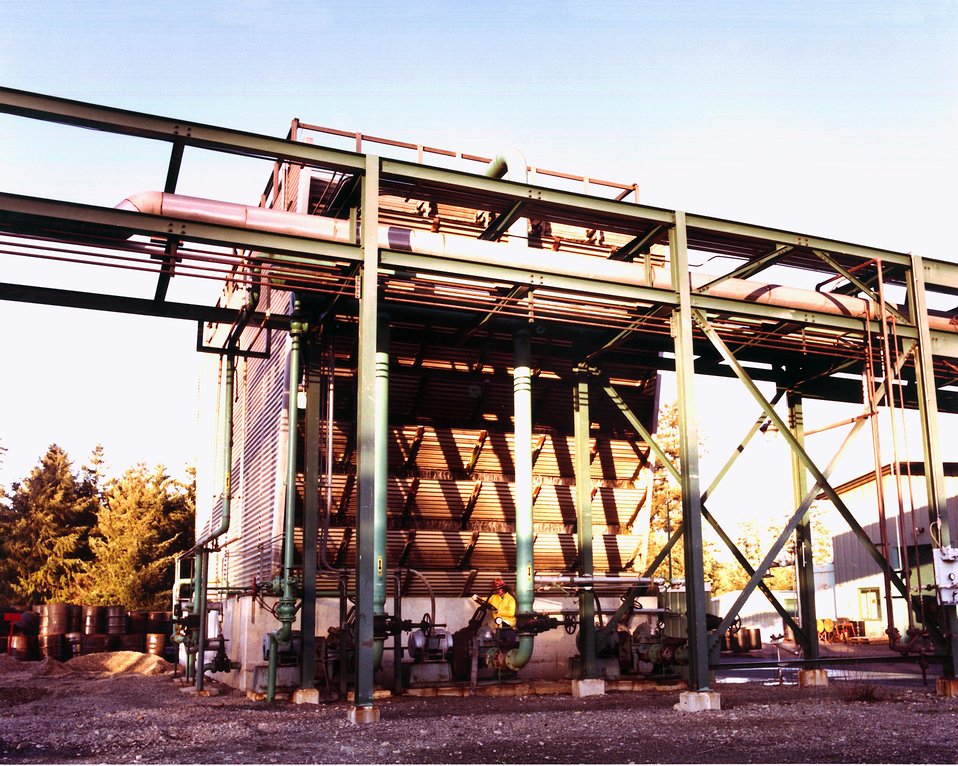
COOLING TOWER.